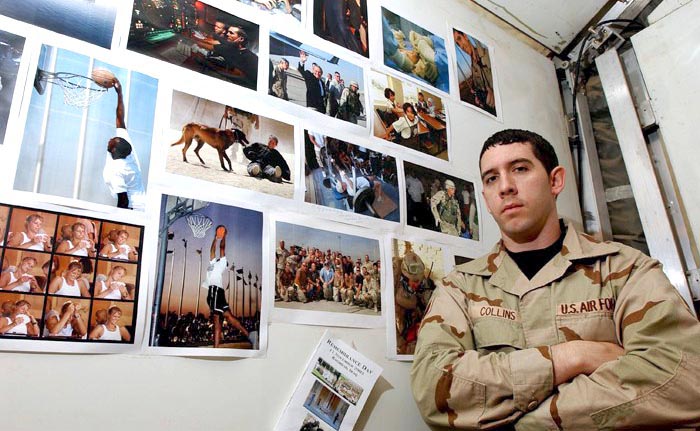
Documenting history

BAGHDAD, Iraq -- Staff Sgt. Levi Collins displays some of the visual information staff's work at Baghdad International Airport. Photographers have taken more than 5,000 photos since arriving here in late October. More than 239 of those images have been sent to the Joint Combat Camera Center at the Pentagon, where they are made available to the public. Collins is a photographer with the 447th Expeditionary Communications Squadron.